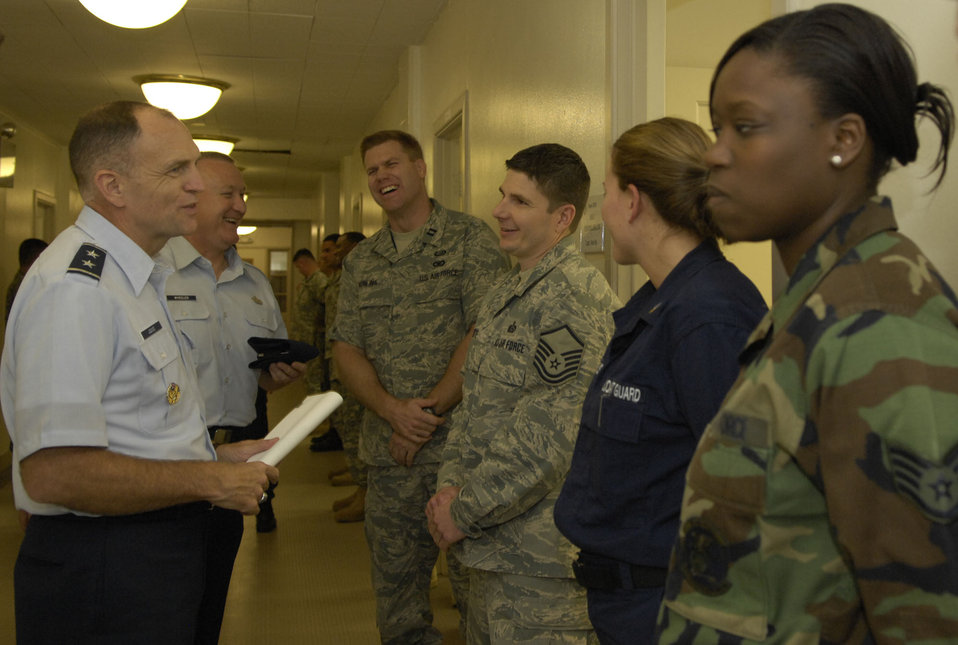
Airmen to support presidential inauguration

Maj. Gen. Ralph J. Jodice II (left) meets with some of the men and women supporting the 2009 presidential inauguration as part of the 56th Armed Forces Inaugural Committee Sept. 19 in Washington, D.C. The general talked to Chief Master Sgt. Paul Wheeler, the Air Force District of Washington command chief (from left to right); Capt. Todd Von Ins from Los Angeles Air Force Base, Calif.; Master Sgt. Brian White from Offutt AFB, Neb.; Navy Petty Officer 1st Class Jennifer Davis; and Staff Sgt. Olayinka Olatunji from Fort Meade, Md. General Jodice is the 320th Air Expeditionary Wing and Air Force District of Washington commander.